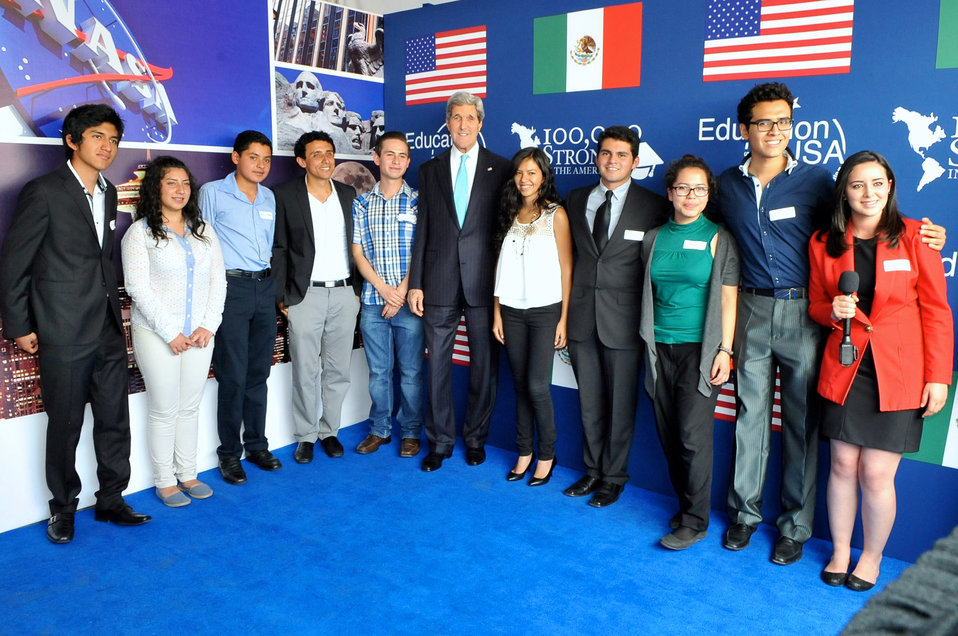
Secretary Kerry Poses With Students in Embassy-Supported Programs

U.S. Secretary of State John Kerry poses with students involved in U.S. Embassy Mexico City-supported programs for English language, youth leadership, and youth advisory roles during a visit to the U.S. booth at the Feria de las Culturas Amigas in Zocalo Plaza, Mexico City, Mexico on May 21, 2014.